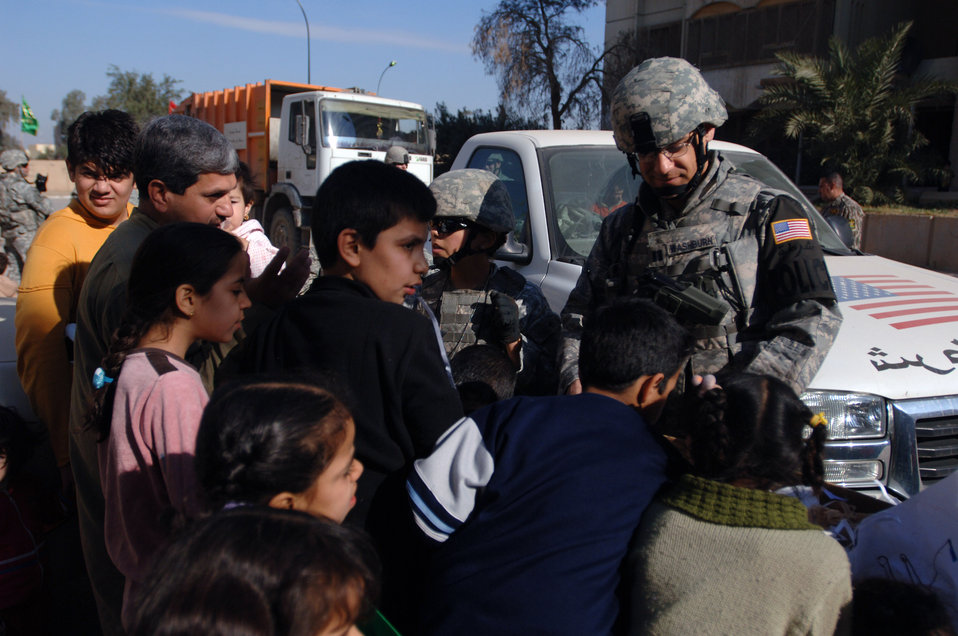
Airmen foster community relations in International Zone

Capt. Ben Washburn hands out toys, school supplies and clothes while on foot-patrol in an apartment complex Jan. 10 in the International Zone of Baghdad, Iraq. The items were gathered by a group of volunteer servicemembers at Joint Base Balad, Iraq, called the Kids of Iraq. The items come from donators in the United States. Captain Washburn is the 732nd Expeditionary Security Forces Squadron Det. 4 operations officer. He is deployed from Vogelway, Germany, and is a native of Colorado Springs, Colo.